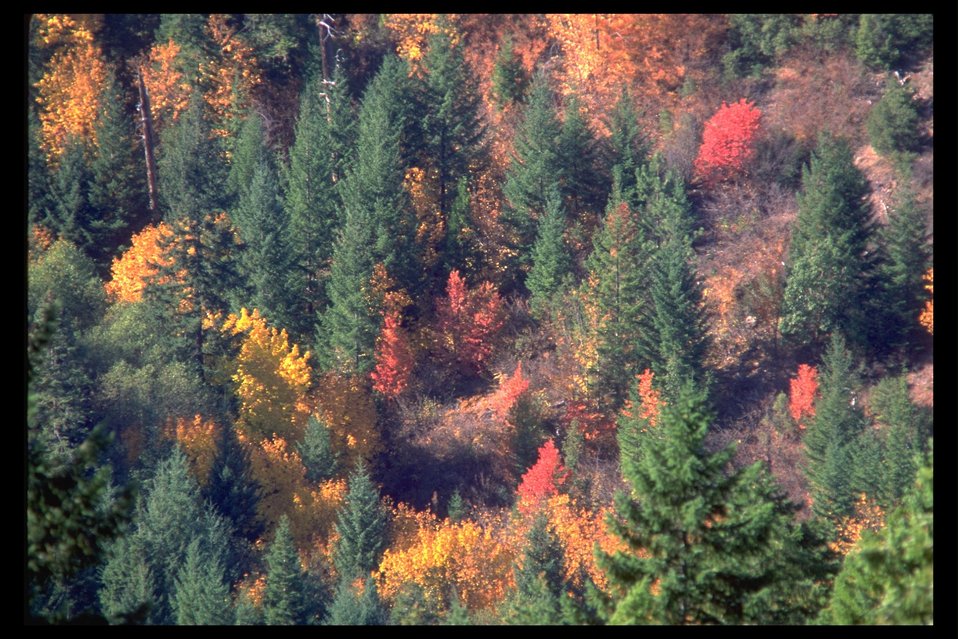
Arial shot of conifers and hardwoods in the Timber Creek Area.